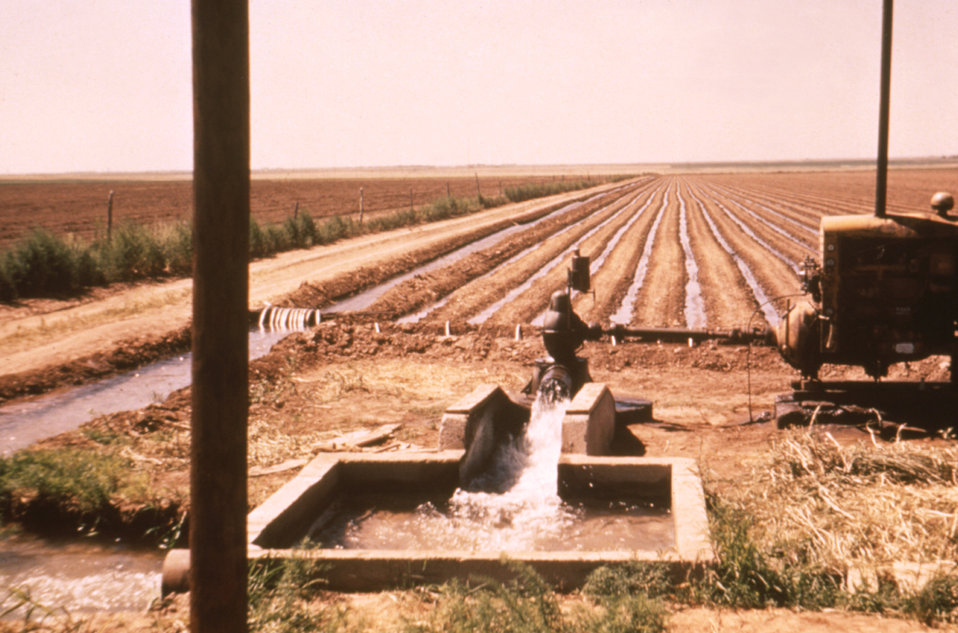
This 1976 photograph shows a Texas irrigation well that was pumping water into the irrigation furrows seen in the background.